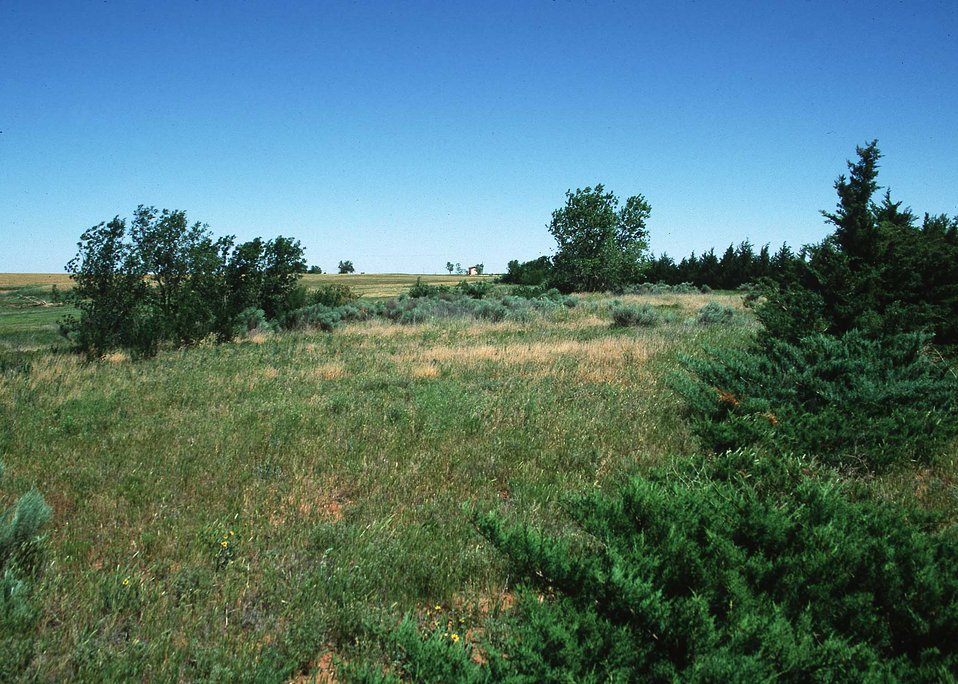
Wildlife habitat area near wheat fields in eastern New Mexico.